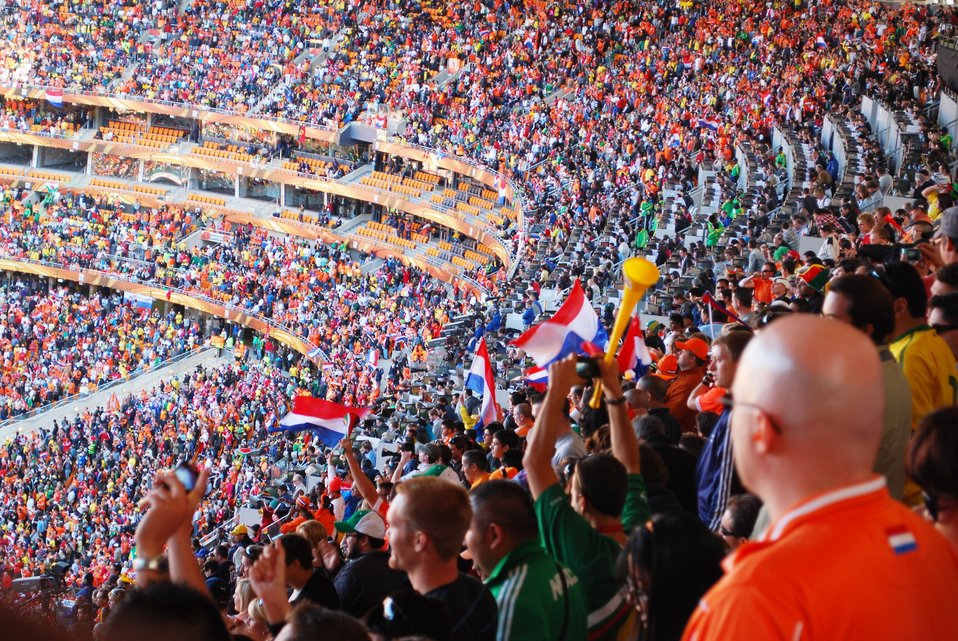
Fans Cheer During The Netherlands vs. Denmark Soccer Match

Dutch and Danish fans cheer during the Netherlands vs. Denmark World Cup soccer match at Soccer City Stadium in Johannesburg, South Africa, on June 14, 2010.